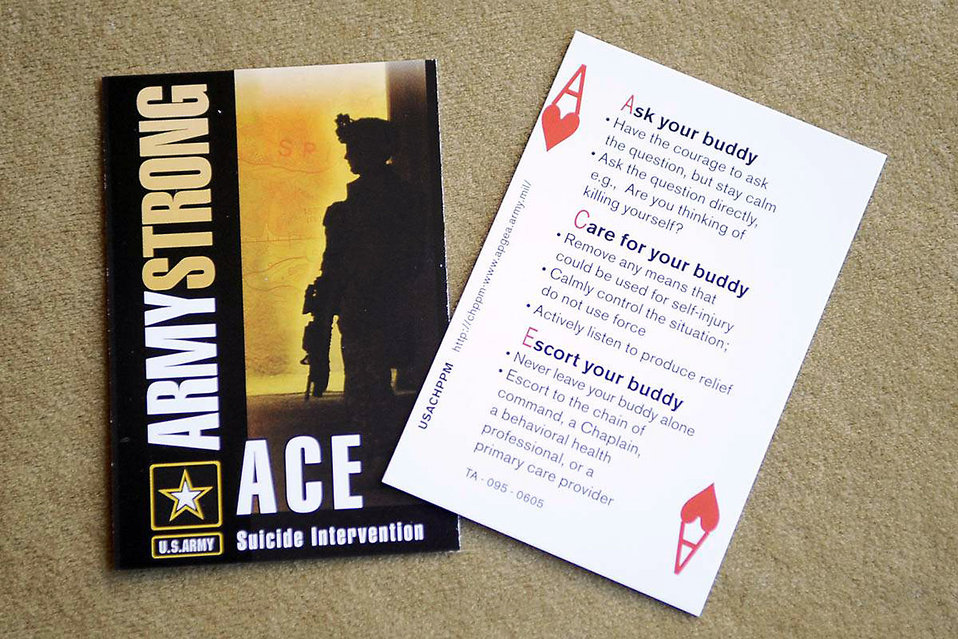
DOD suicide prevention conference under way

Army officials developed an suicide intervention card.